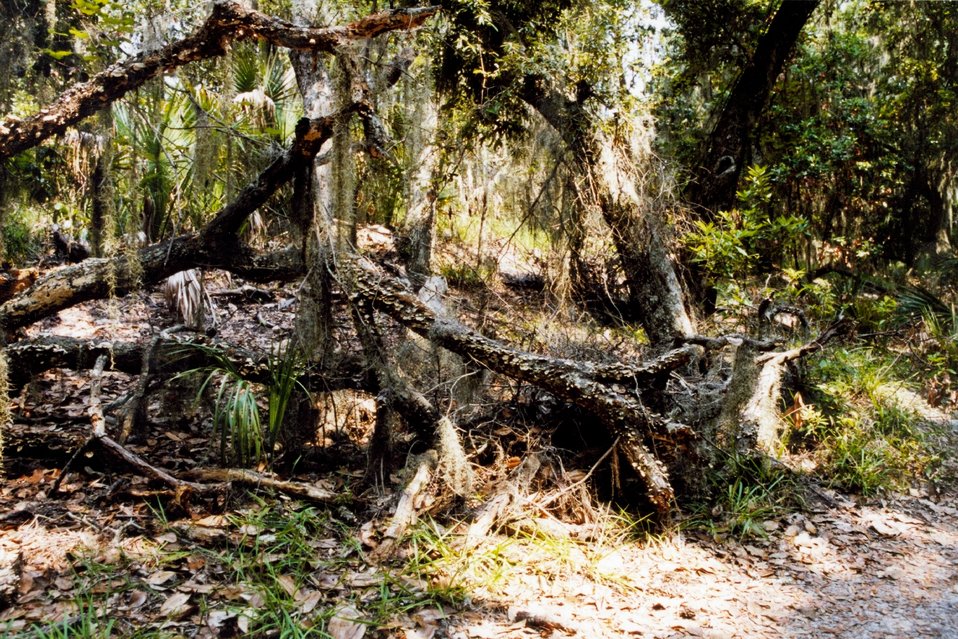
Live oaks and palmettos back on the island behind the dune line.